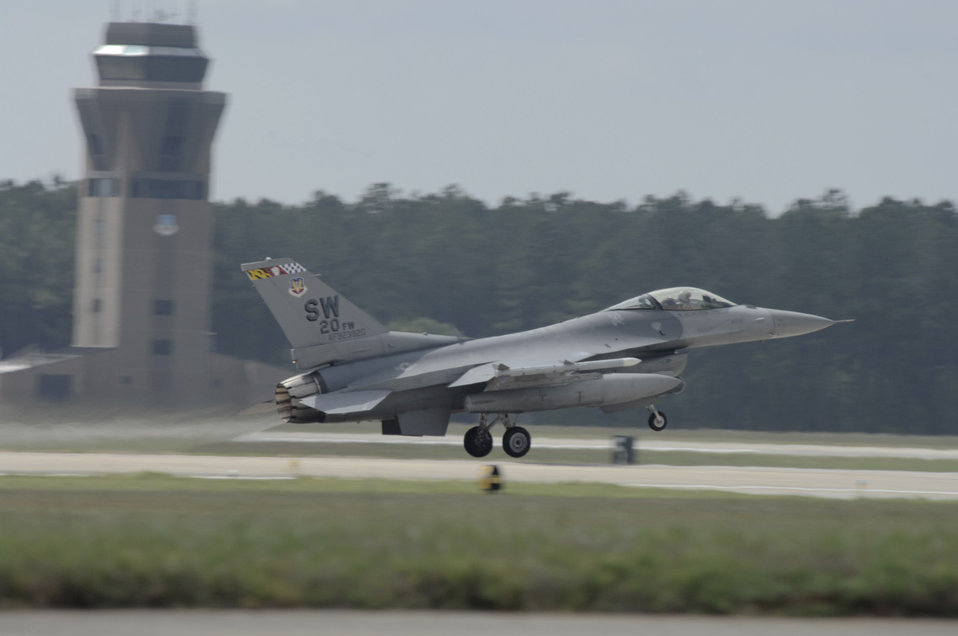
Combat Hammer

Lt. Col. Miles Demayo takes off in his F-16 Fighting Falcon from Shaw Air Force Base, S.C., May 9 en route to Hill AFB, Utah. Sixteen jets and 172 Airmen from Shaw AFB went to Hill AFB for Combat Hammer, an exercise that assesses operational effectiveness and suitability of weapons and weapons systems in several different tactical scenarios. Colonel Demayo is the 55th Fighter Squadron commander.